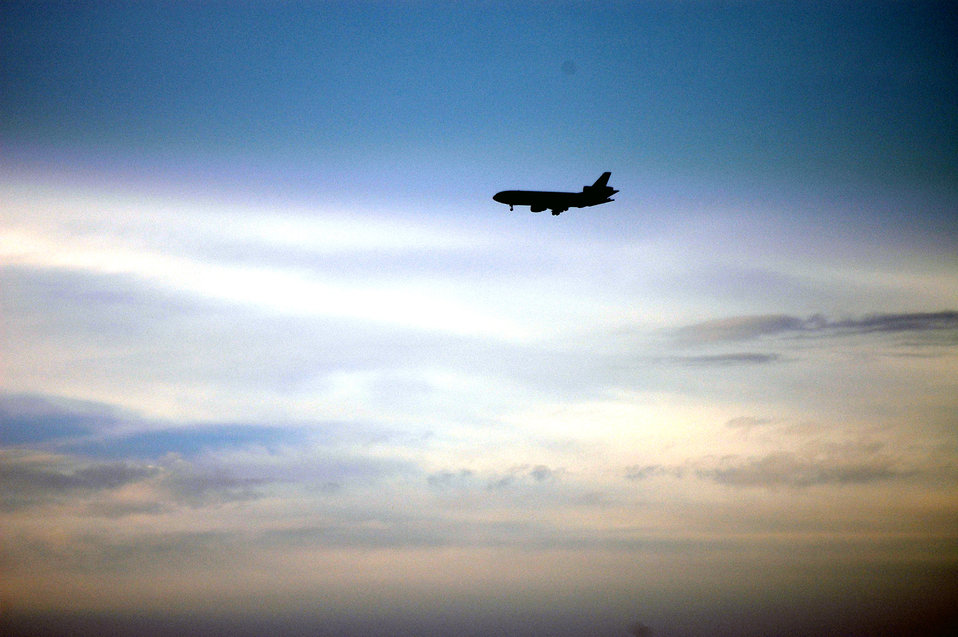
At the end of a long day

A KC-10 Extender refueling aircraft from the 305th Air Mobility Wing at McGuire Air Force Base, N.J., flies over the base on its way back from a mission Oct. 3. The KC-10 is one of the Air Force's main refuelers.